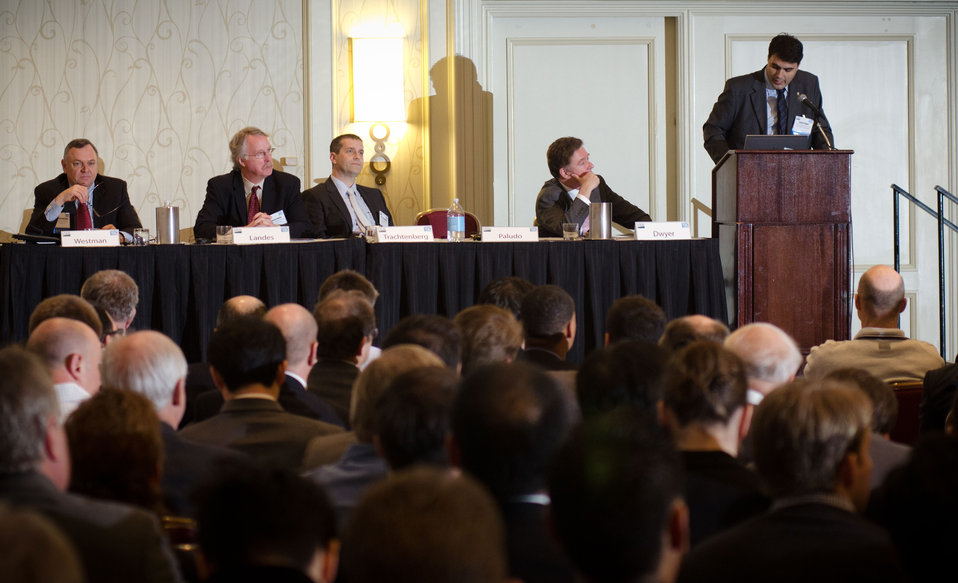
Seneri Kernbeis Paludo’s talk about ”Domestic Consumption’s Impact on Export Potential in Brazil,” drew the attention of the audience and fellow speakers (left to right) American Meat Institute International Trade Vice President William Westman, Agriculture Economic Research Service Agricultural Economist Rip Landes, McLarty Associates’ Eric Trachtenberg and Agriculture Global Policy Analysis Division Director and moderator Mike Dwyer, during the Food Prices & Farm Income session on “Export Opportunities and Competition in Brazil, Russia, India, and China (BRIC) Countries,” during the 2012 Agricultural Outlook Forum, “Moving Agriculture Forward, Growing, Innovating and Celebrating 150 Years” held at the Crystal Gateway Marriott Hotel in Arlington, Virginia, on Thursday, February 23, 2012. This year’s forum coincides with the 150th anniversary of the Department of Agriculture addressing economics, marketing, research, food safety, nutrition, conservation, rural development, alternative energy, trade and many other agricultural issues.